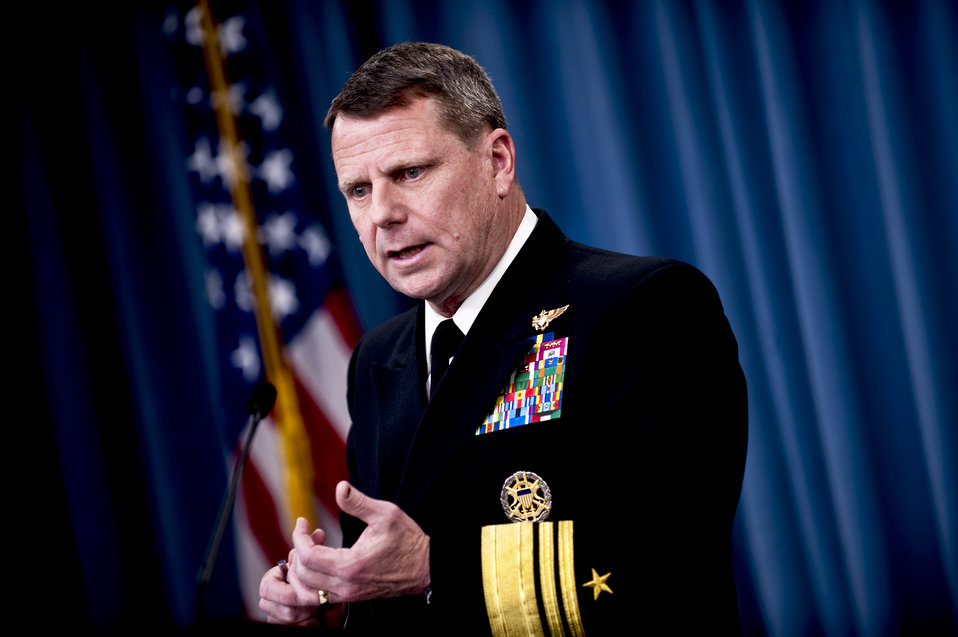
Operation Odyssey Dawn update

Navy Vice Adm. William Gortney, director of the Joint Staff, updates the press at a briefing on Operation Odyssey Dawn at the Pentagon, March 24, 2011.